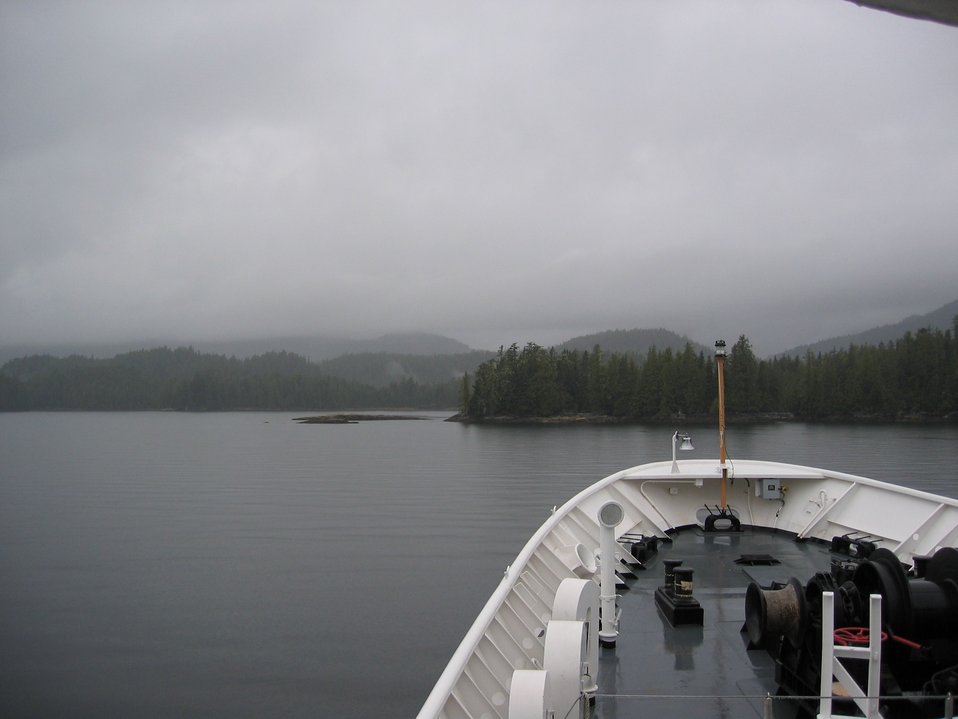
Bow of NOAA Ship RAINIER underway to Rudyerd Bay working area.